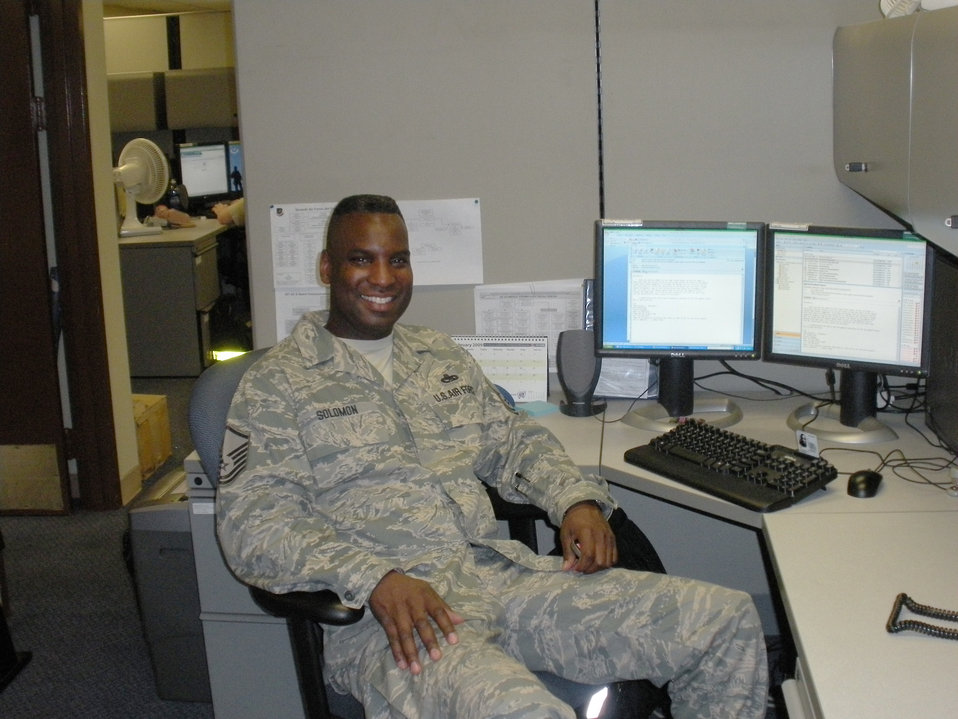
Chuck Solomon, a Human Resources Assistant in Region 3, served in the Air Force.